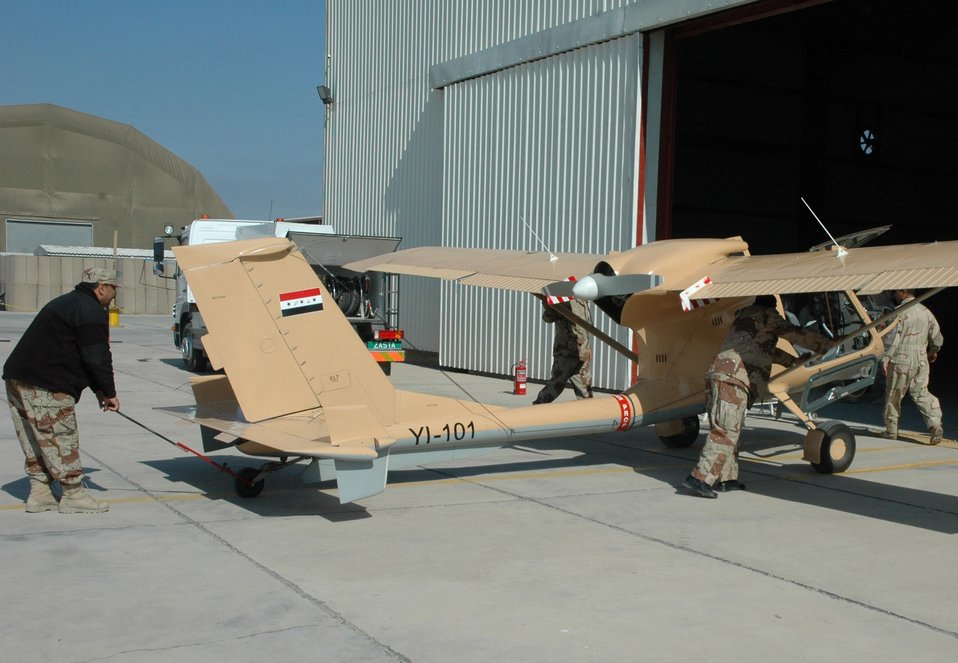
Iraqi air force takes flight with help from U.S. Airmen

Iraqi airmen from Squadron 70 at Basra Air Base recover one of two Seeker aircraft after a mission. Squadron 70 flies intelligence, surveillance and reconnaissance missions over oil pipelines and other areas of interest, all the while keeping an eye out for insurgent activity.